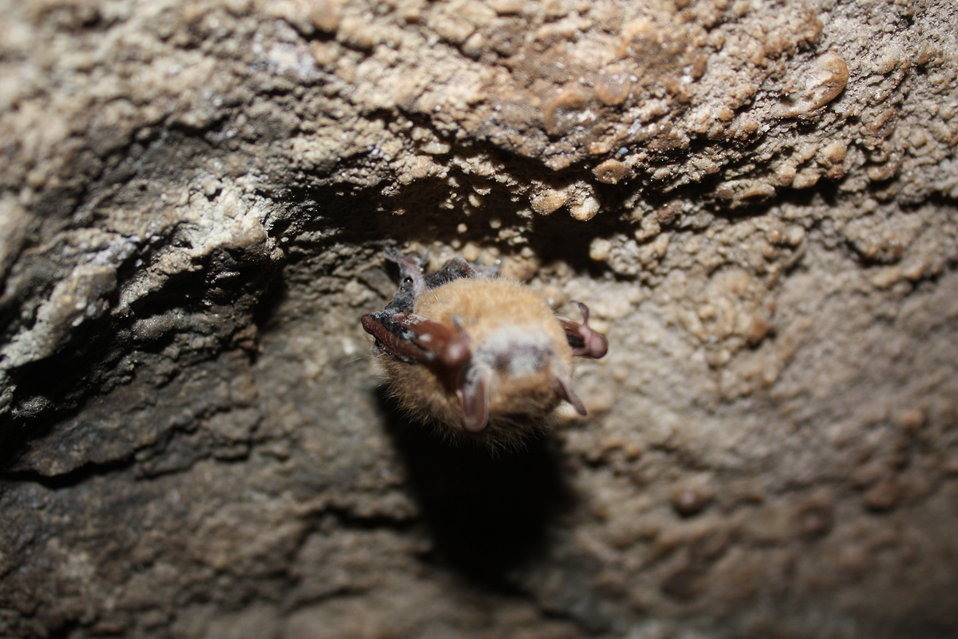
tri-colored bat with WNS